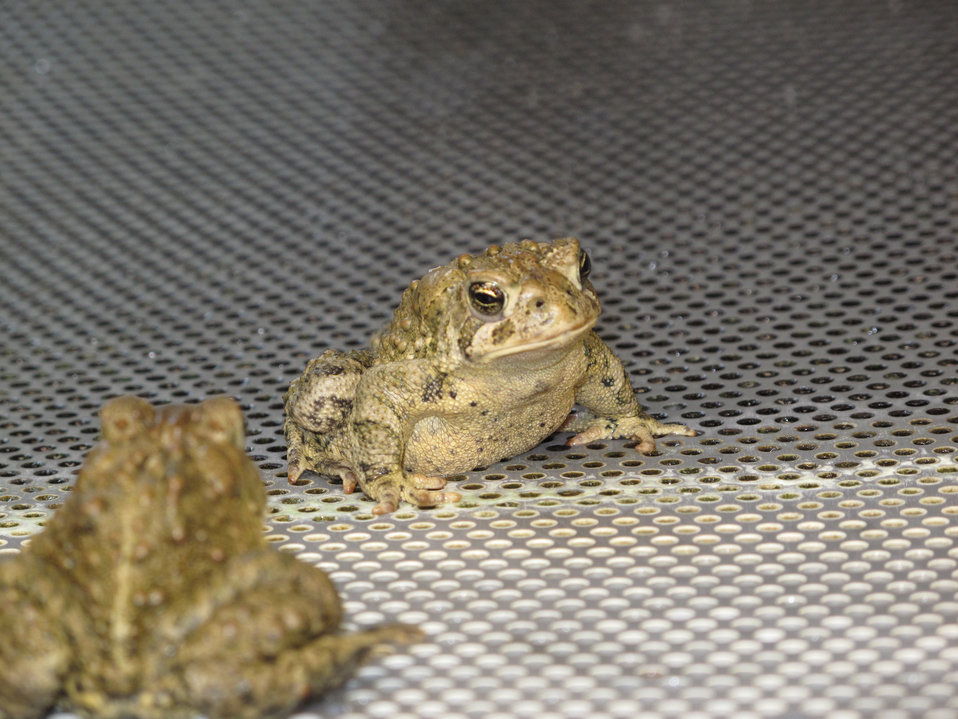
Wyoming Toads

Without warning “something” began to take the Wyoming Toad out of the wild in the mid 1970’s. In the mid-80’s the 2-inch-long (females) toads with distinct dark blotching were considered extinct.